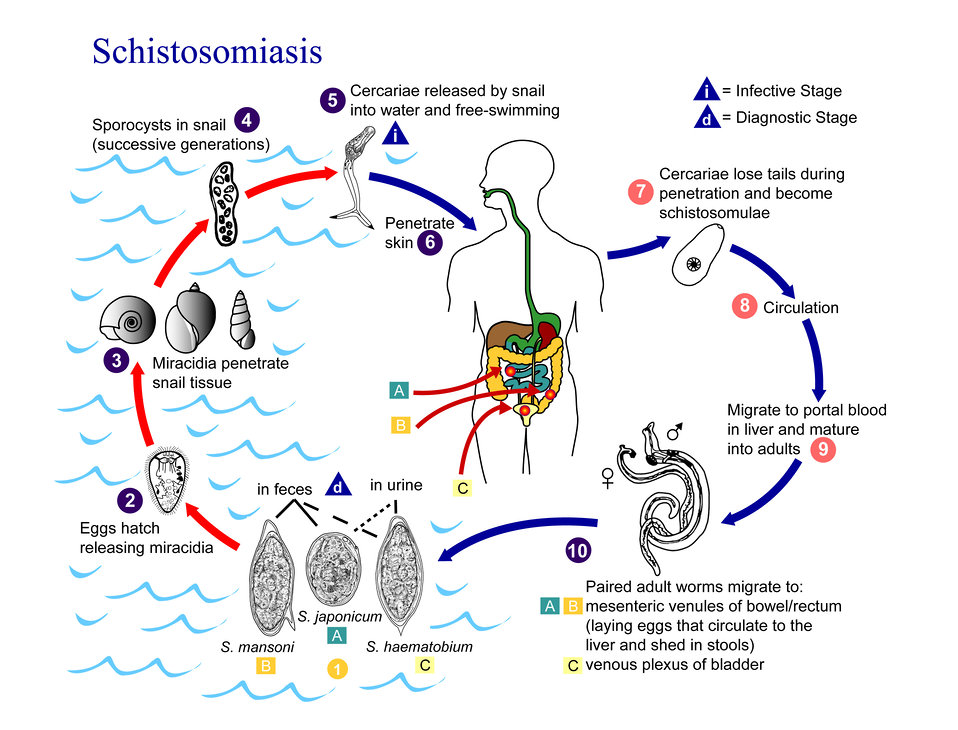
This is an illustration of the life cycle of the parasitic agents responsible for causing Schistosomiasis.